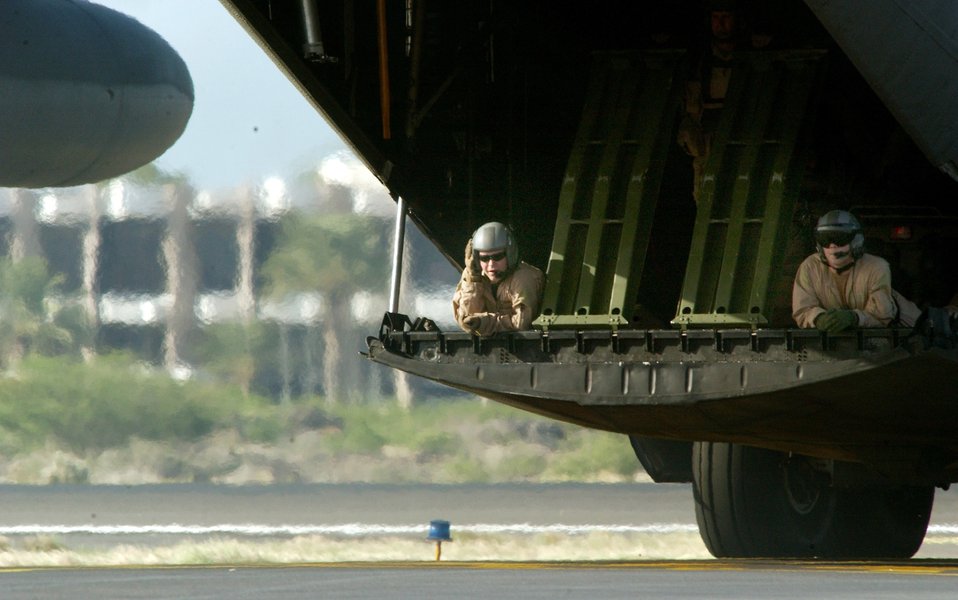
Patient rescue exercise

CAMP LEMONIER, DJIBOUTI, Africa (AFPN) -- Air Force C-130 Hercules loadmasters direct the aircraft to a secure location while Air Force pararescuemen perform a simulated patient rescue exercise here Feb. 12.